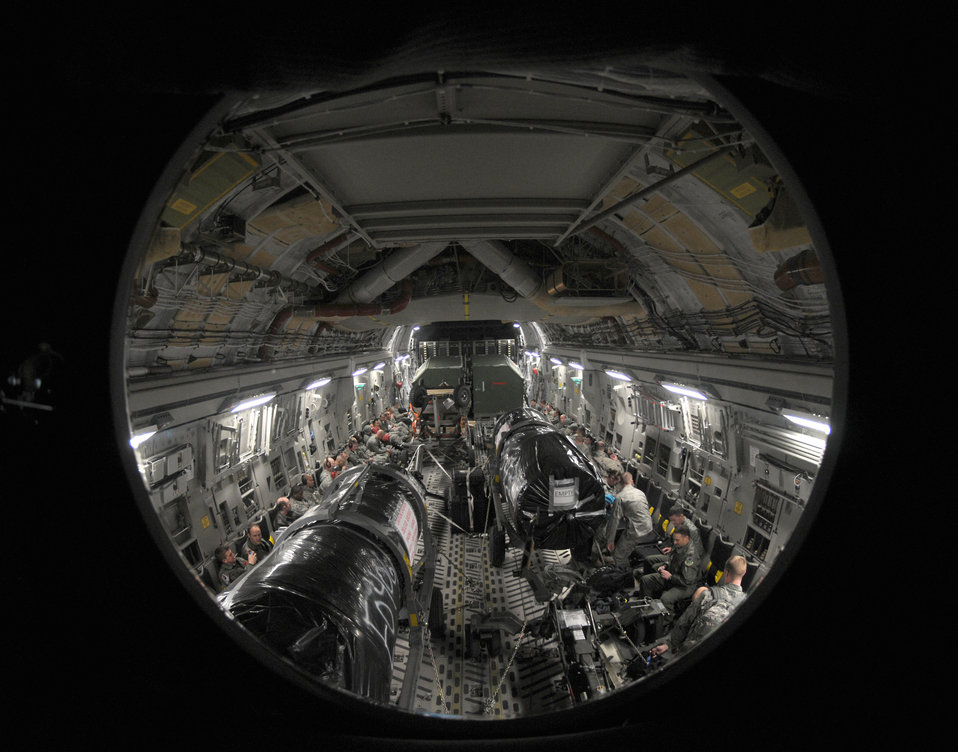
Operation Odyssey Dawn

Airman from the 48th Fighter Wing and members of the Heavy Airlift Wing, Papa Air Base, Hungary, prepare to deploy in support of Operation Odyssey Dawn on Royal Air Force Lakenheath, England, March 19, 2011. Members of the 48th Fighter Wing were recently notified that they would be supporting efforts in Operation Odyssey Dawn. The 48th FW provides all-weather, day or night air superiority and air-to-ground precision combat capability as well as combat search and rescue capabilities.